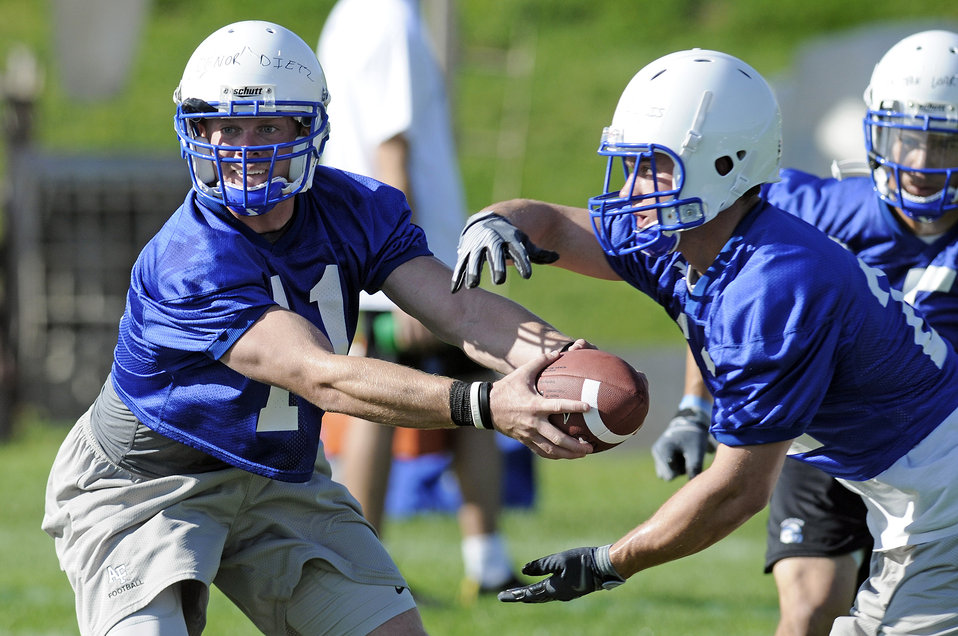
Academy football drills

Air Force Academy sophomore Connor Dietz hands off the ball during football practice Aug. 4 at the U.S. Air Force Academy near Colorado Springs, Colo. Dietz is competing for the starting quarterback position with fellow sophomores Tim Jefferson and Asher Clark. The Falcons host the Nicholls State Colonels Sept. 5 in their home opener.